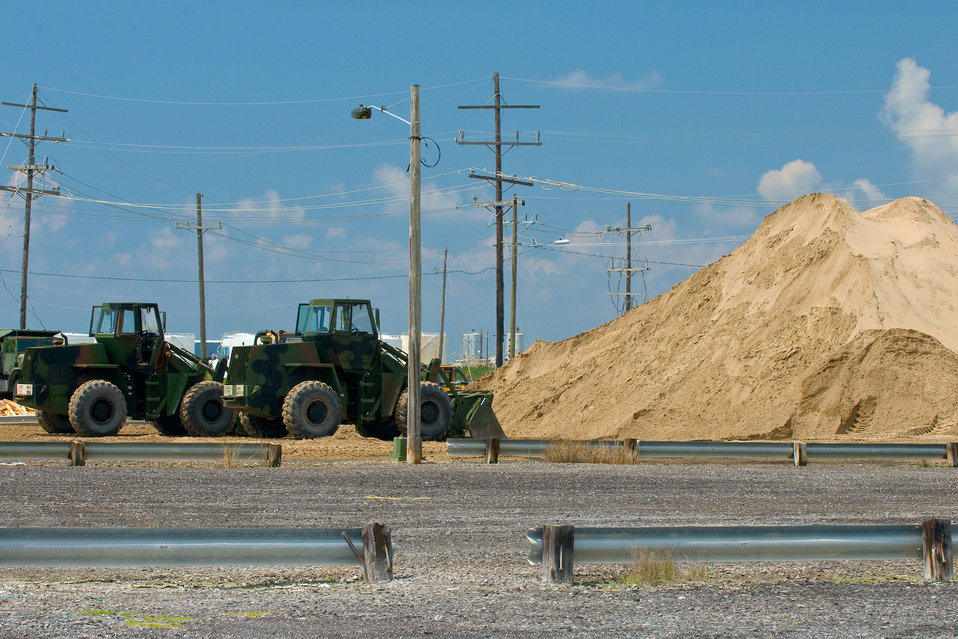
June 1, Heavy equipment ready for response

Staging area for beach cleanup, Lafourche, La.